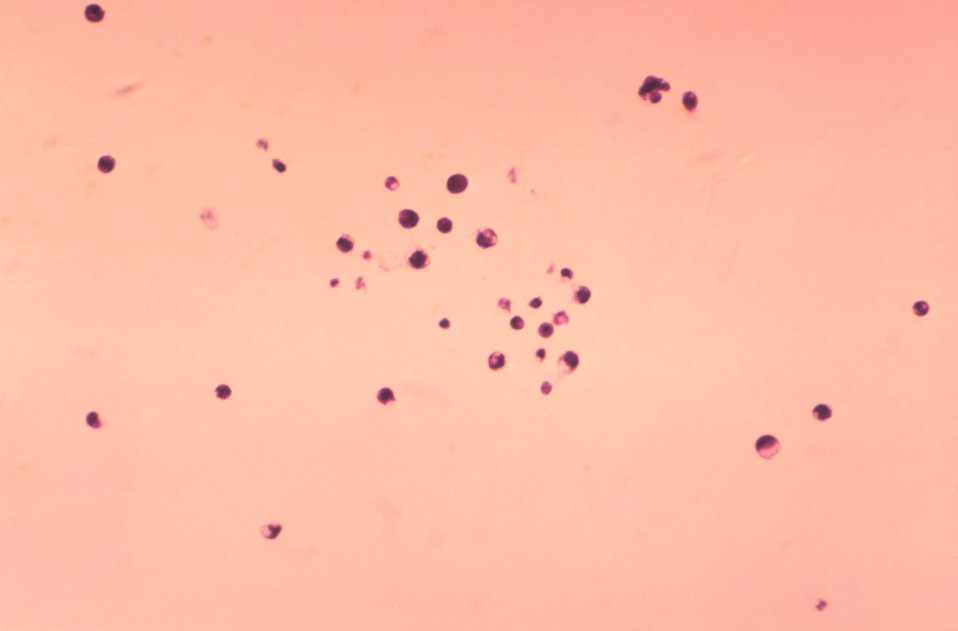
This photomicrograph is the third in a series of three images depicting the cellular content of a peritoneal exudate extracted from the abdominal cavity of a guinea pig. The prevalent cell type is represented by numerous white blood cells (WBCs) of the polymorphonuclear type (PMNs). This image was captured under a magnification of 100X. See PHIL 15443, and 15444, for the other two images in this series.